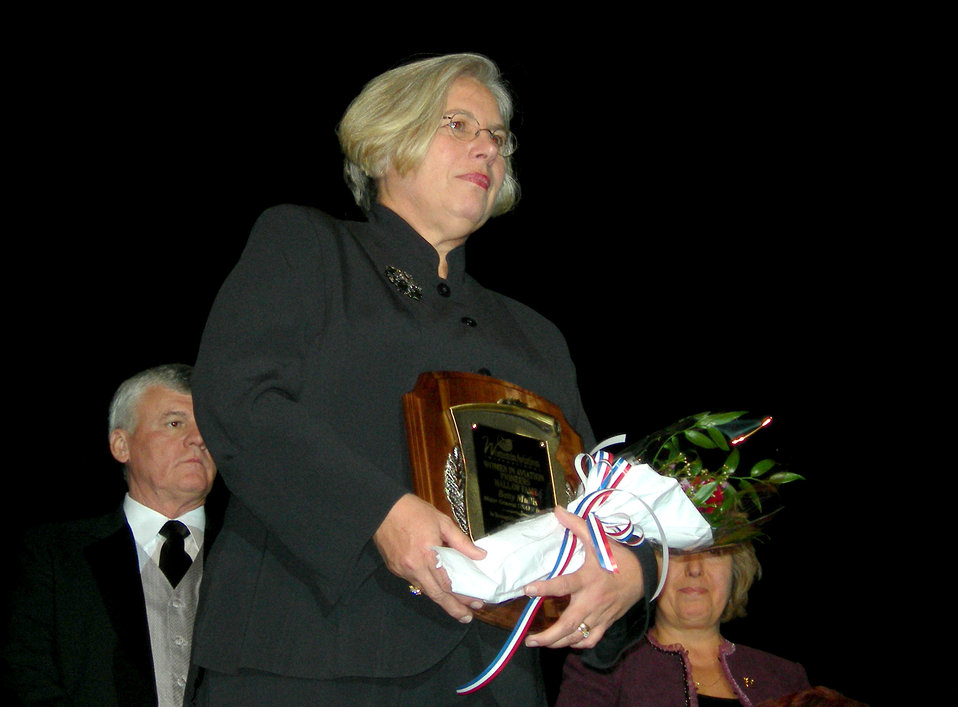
Three Air Force trailblazers among Hall of Fame inductees

Retired Air Force Reserve Maj. Gen. Betty Mullis is inducted into the Pioneer Hall of Fame for Women in Aviation, International, in Nashville, Tenn., Saturday, March 25, 2006.